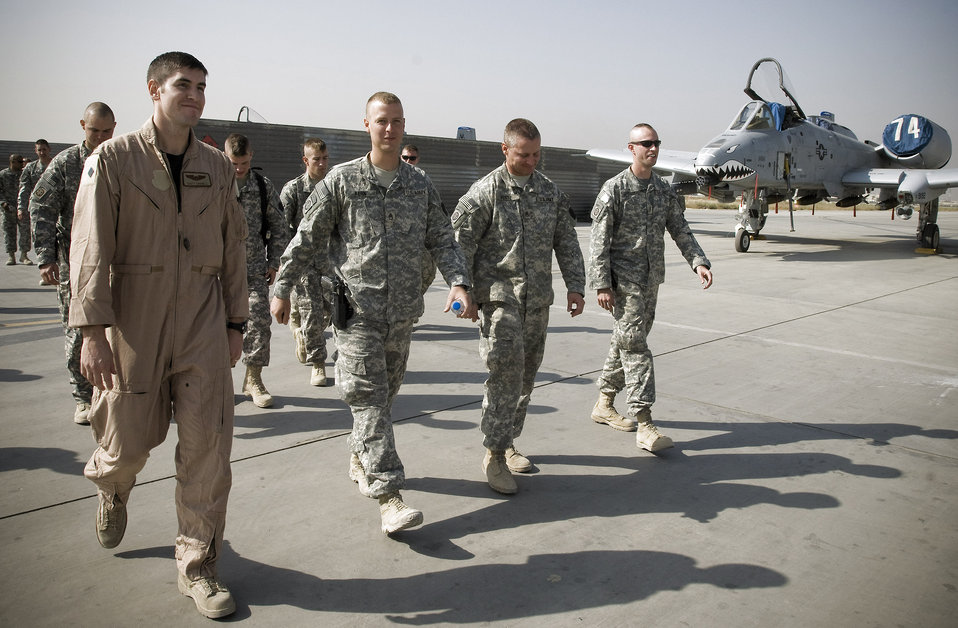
Air support unites Airmen, Soldiers in Afghanistan

Capt. Scott Crowell talks with Pennsylvania Army National Guard Sgt. Adam Kerns, Staff Sgt. Stephen Wertz and 1st Lt. David Jarrett during an Oct. 28 visit to Bagram Airfield, Afghanistan. Members from the 391st Expeditionary Fighter Squadron and the 75th Expeditionary Fighter Squadron hosted the Soldiers who wanted to thank the pilots who protect ground forces with close-air support while engaged in firefights with enemy forces. Captain Crowell is an F-15E Strike Eagle pilot.